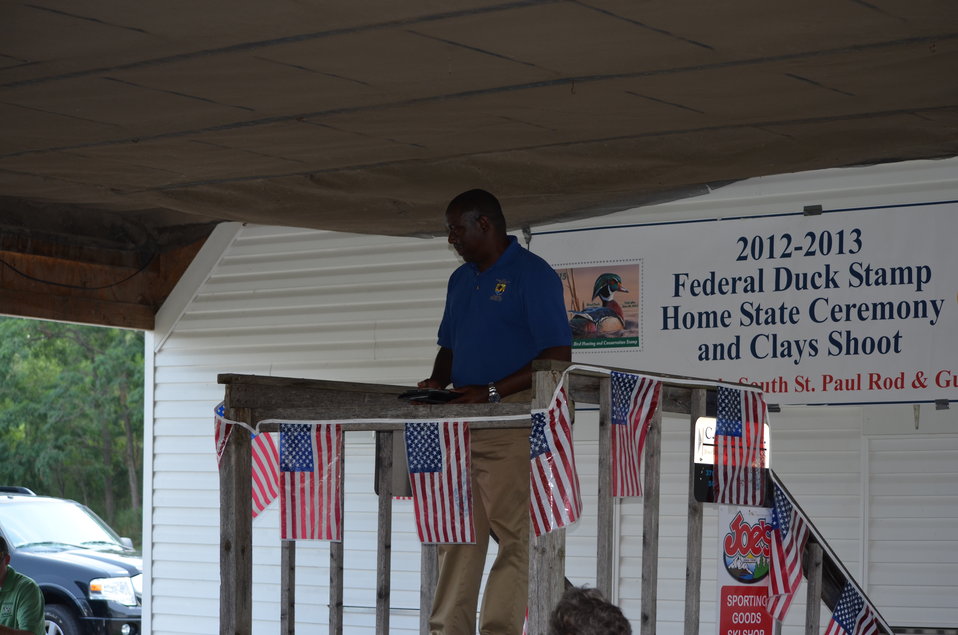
Assistant Director of Migratory Bird Program, Jerome Ford, talks about the Federal Duck Stamp Program at the South Saint Paul Rod and Gun Club.